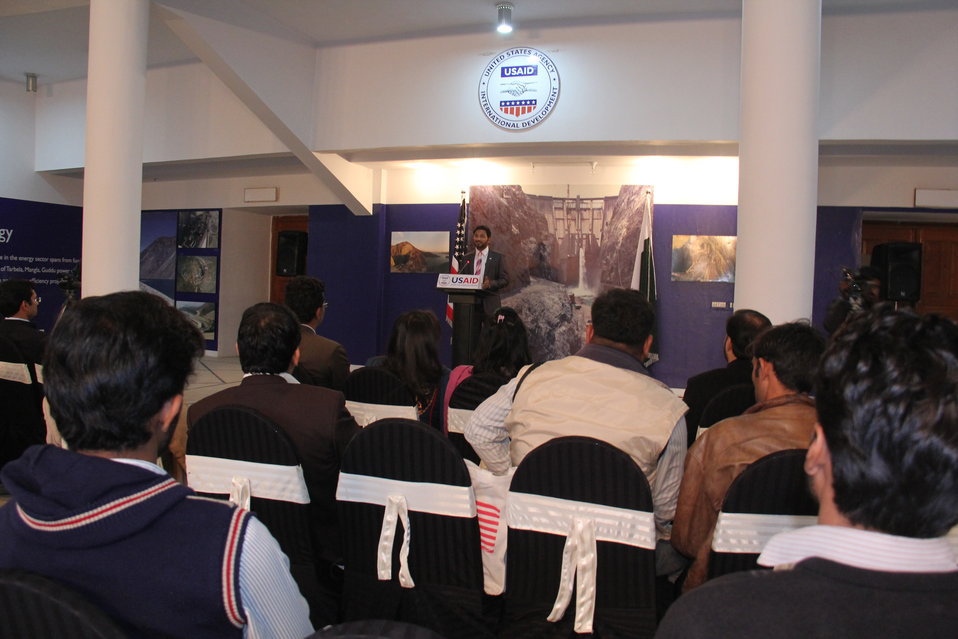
To this day, the United States continues to support Pakistan with extensive programs in the energy, economic growth, stabilization, education, and health care sectors.